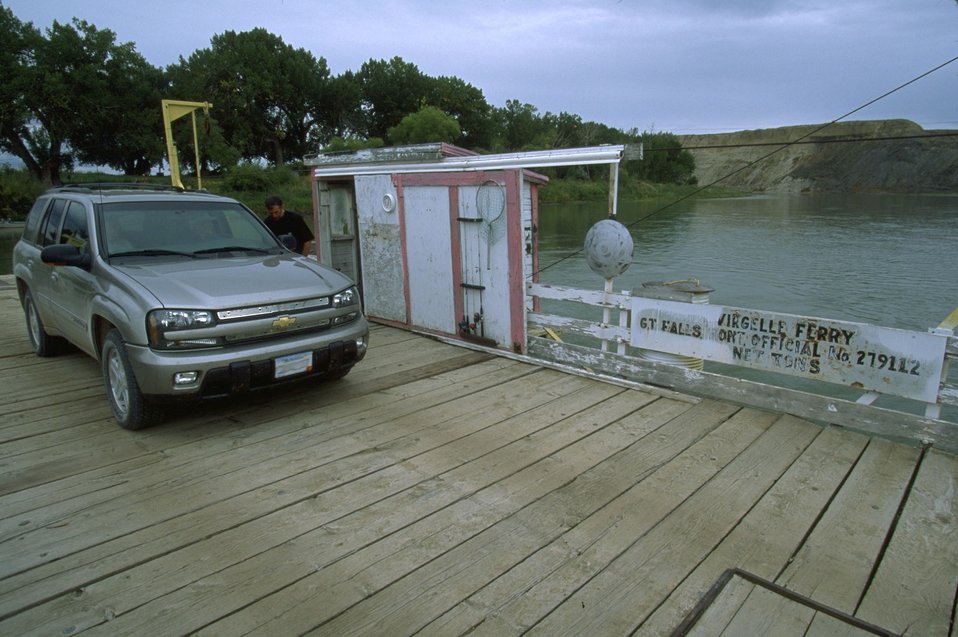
Stafford Ferry across the Upper Missouri River